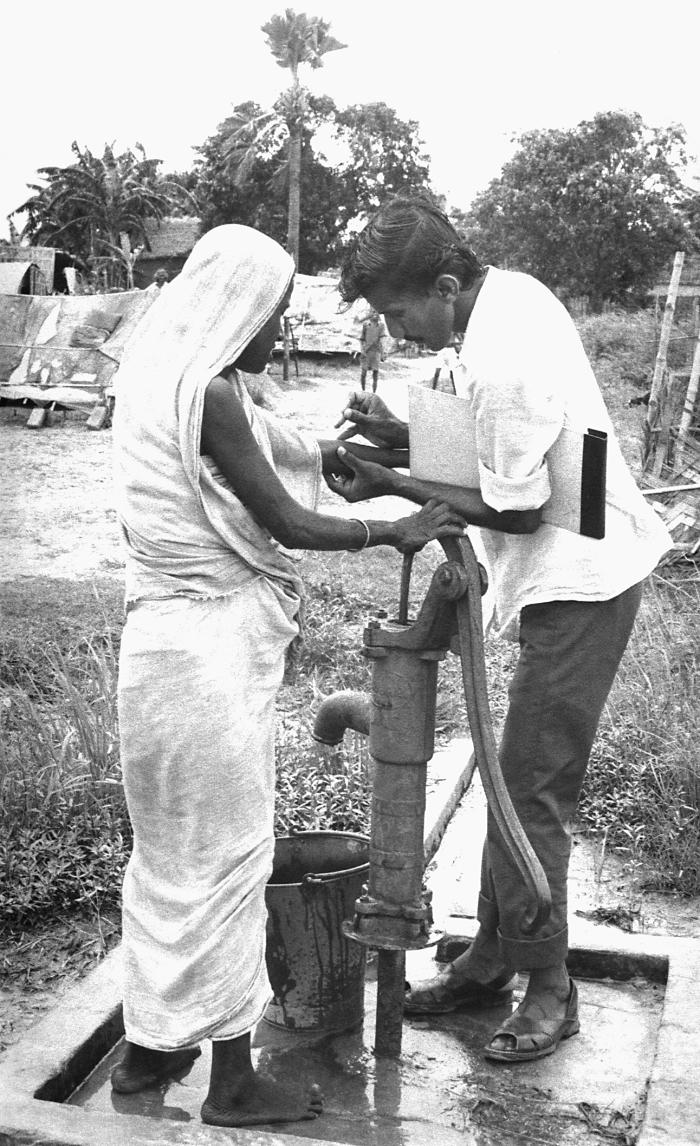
This volunteer smallpox eradication team vaccinator was in the process of administering a vaccine to a woman who was obtaining water from a local well. The vaccine is not given with a hypodermic needle, but given using a bifurcated (two-pronged) needle that has been dipped into the vaccine solution. When removed, the needle retains a droplet of the vaccine. The needle is used to prick the skin a number of times in a few seconds. The pricking is not deep, but it will cause a sore spot, and one or two droplets of blood to form. The vaccine usually is given in the upper arm. If the vaccination is successful, a red and itchy bump develops at the vaccine site in three or four days. In the first week, the bump becomes a large blister, fills with pus, and begins to drain. During the second week, the blister begins to dry up and a scab forms. The scab falls off in the third week, leaving a small scar. First-time vaccinees have a stronger reaction than those who are being revaccinated.